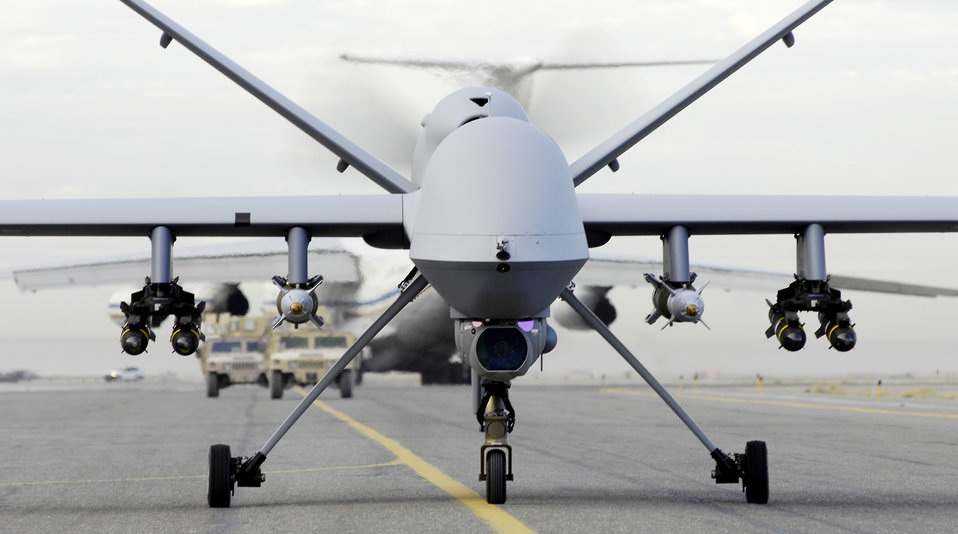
July 15 airpower summary: Reaper provides topcover

An armed MQ-9 Reaper unmanned aerial vehicle taxis down a runway in Afghanistan. During operations July 15, a Reaper released several guided bomb unit-12's on possible improvised explosive devices located in a roadway near Qalat.